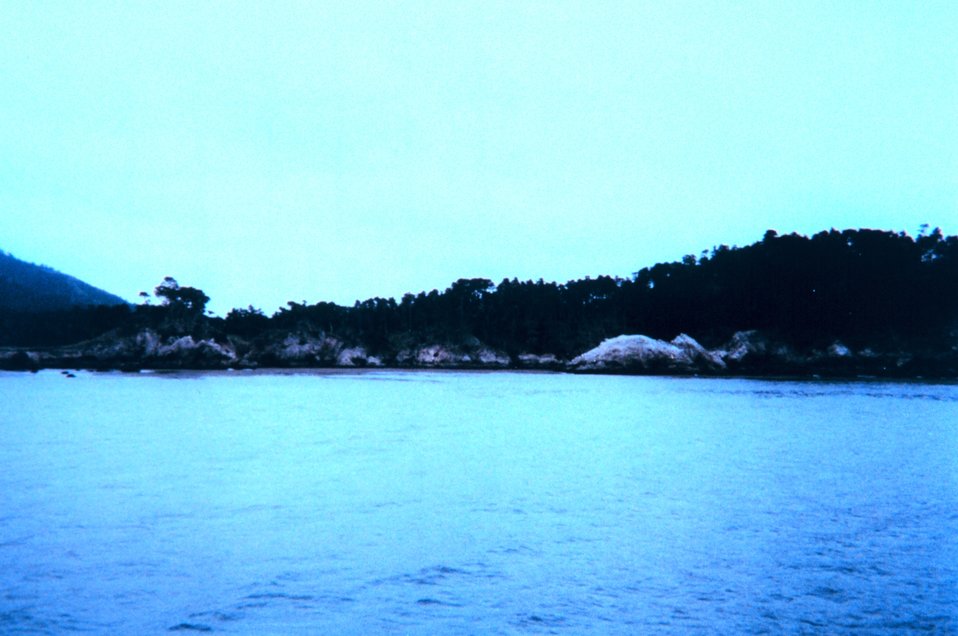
Portion of composite image of Point Lobos.